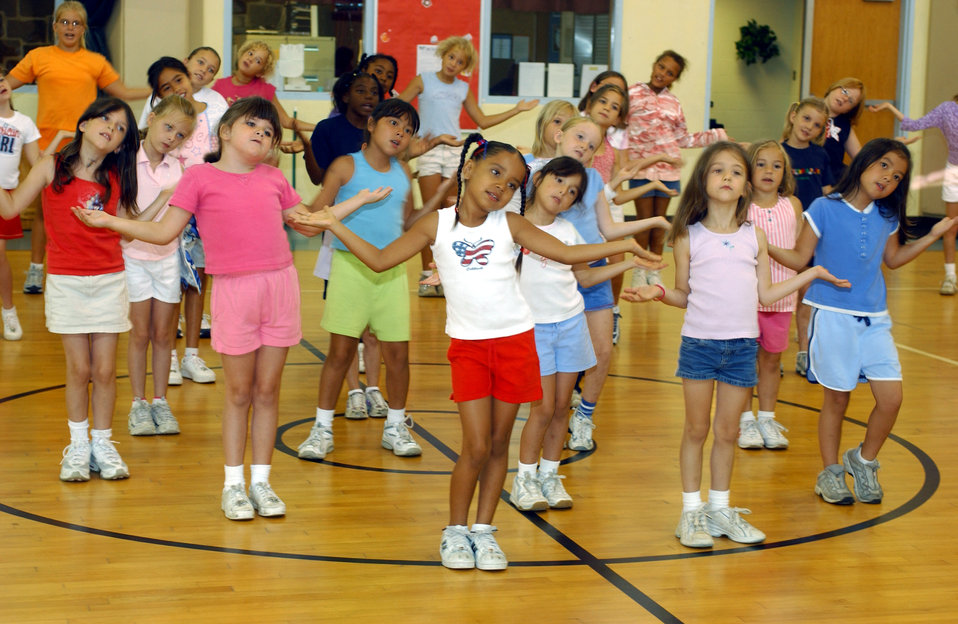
Girl power

LAJES FIELD, Azores - A group of young girls practice various dance routines during Cheerleading Camp here Aug. 17. The week-long camp ends with a presentation for the parents.